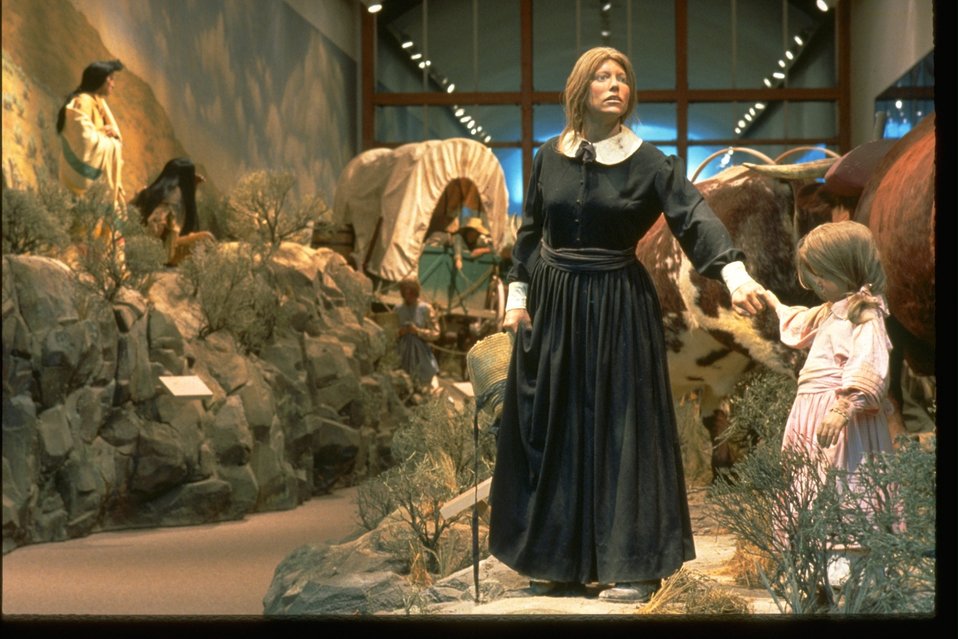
Living history exhibit at NHOTIC. Pioneer mother walks with daughter.